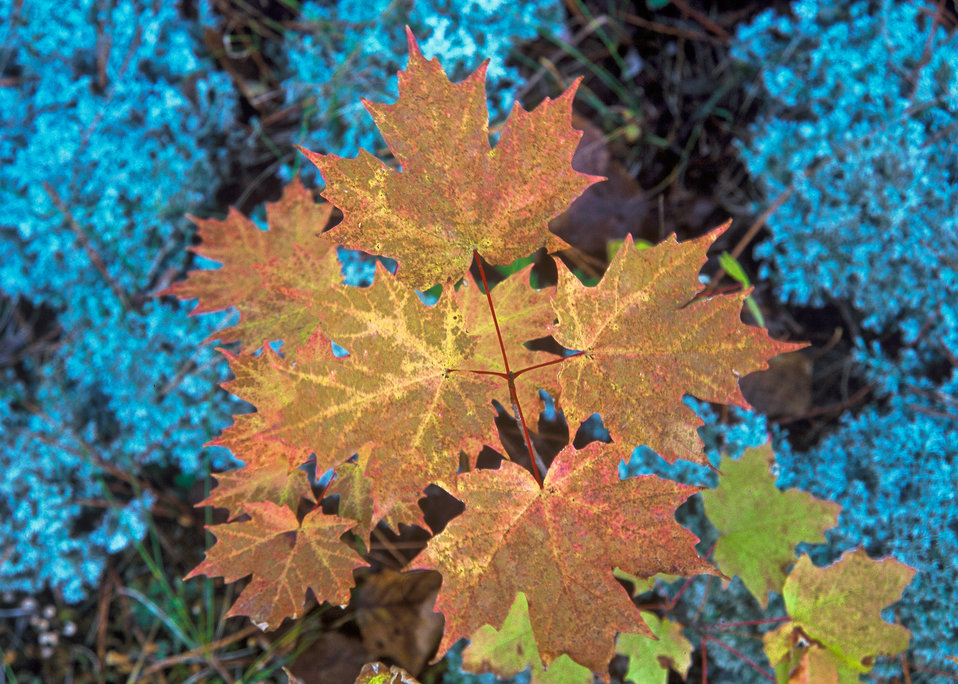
Maple leaves of many colors offer an unending palette of color in the Hiawatha National Forest on the Upper Peninsula of Michigan.